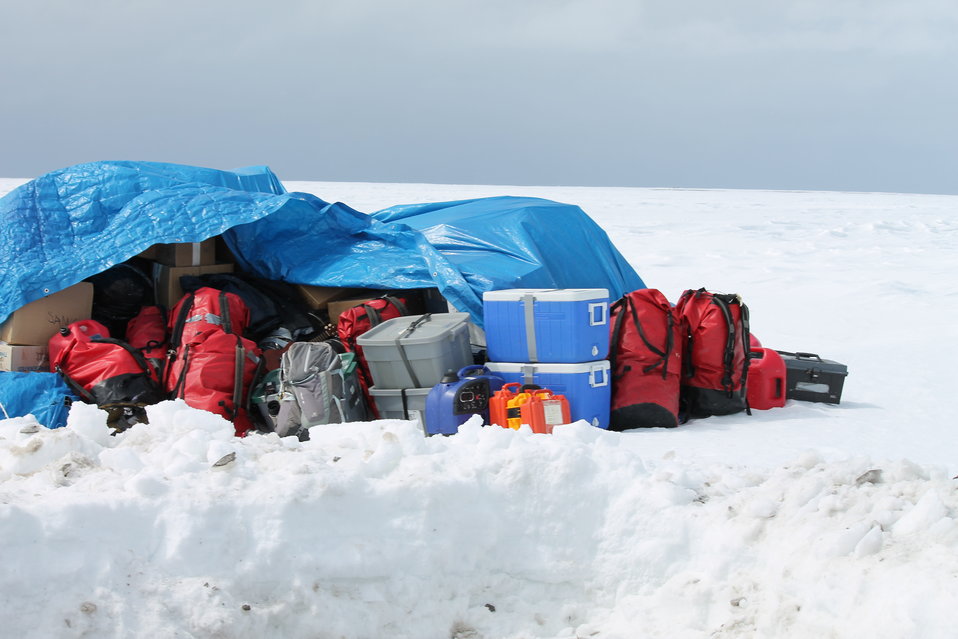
Staging gear

Some camps will stage gear at or near their project sites before the project begins to reduce flight times later in the season.

USFWS Yukon Delta NWR